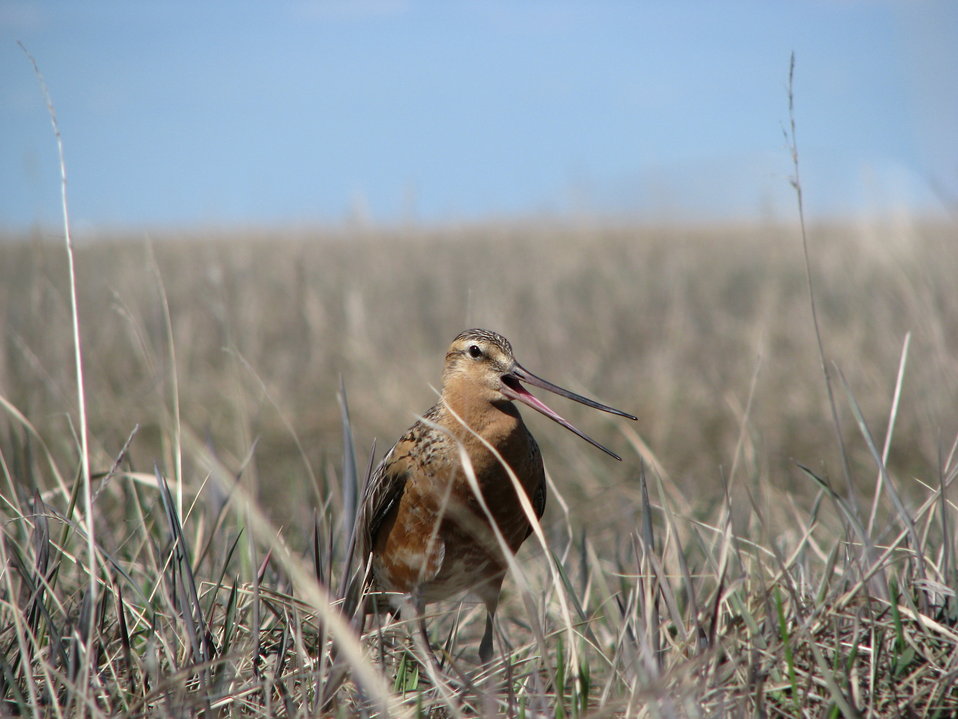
Godwit

USFWS Yukon Delta NWR
This male godwit was letting his mate know that something was not quite right.